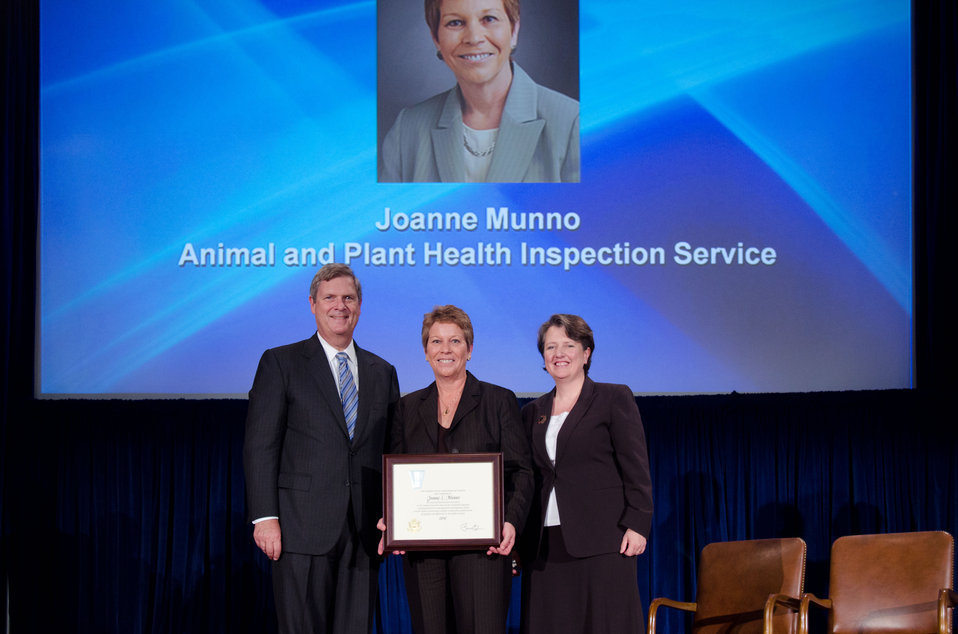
Agriculture Secretary Tom Vilsack (l) and Deputy Secretary Kathleen Merrigan (r), presents the Award to Joanne Munno, Deputy Administrator, Marketing and Regulatory Programs, Business Service, Animal and Plant Inspection Service. The President of the United States of America has conferred on Joanne Munno the rank of Meritorious Executive in the Senior Executive Service for sustained superior accomplishment in management of programs of the United States Government and for noteworthy achievement of quality and efficiency in the public service. On Wednesday, September 14, 2011 in the Jefferson Auditorium at the US Department of Agriculture in Washington, DC.